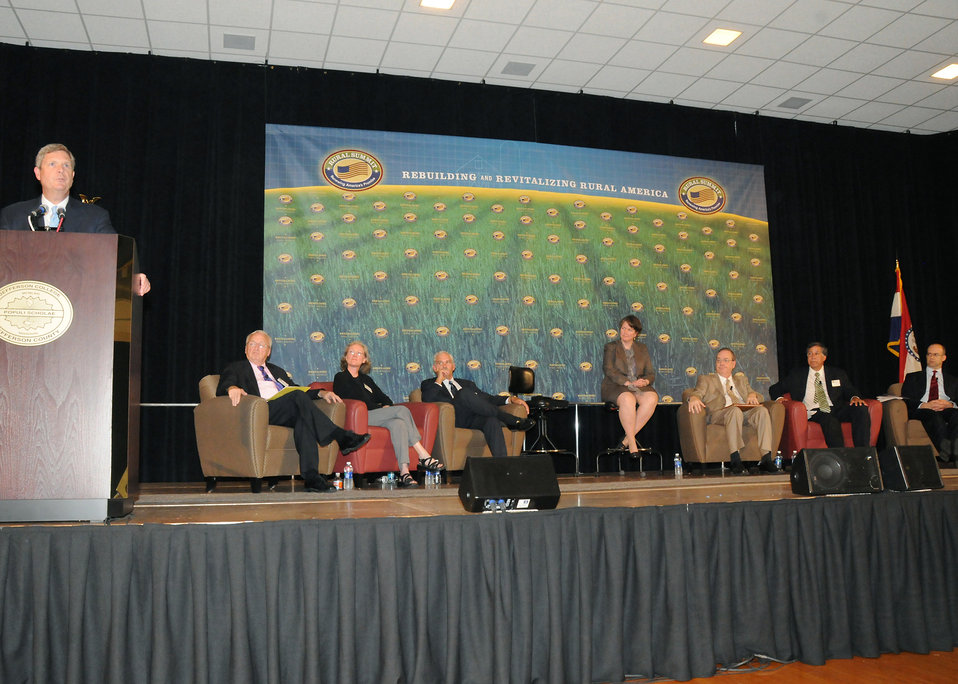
Agriculture Secretary Tom Vilsack makes closing remarks at the National Rural Summit held at Jefferson College in Hillsboro, MO., on Thursday, June 3, 2010. (Sitting on the stage are L to R Under Secretary for Food, Nutrition, and Consumer Services Kevin Concannon moderator of the Regional Food Systems and Nutrition listening session, Deputy Under Secretary for Marketing and Regulatory Programs Ann Wright moderator of the Forest Restoration, Rural Recreation and Private Land Conservation listening session, Deputy Under Secretary for Farm and Foreign Agricultural Services Michael Scuse moderator of the Farm Competiveness and Productivity listening session, Agriculture Deputy Secretary Kathleen Merrigan, Under Secretary for Rural Development Dallas Tonsager moderator of the Renewable Energy and Biofuels listening session, Under Secretary for Marketing and Regulatory Programs Ed Avalos moderator of the Expanding Opportunities for Rural Business listening session, and Rural Utility Service Administrator John Adelstein moderator of the Building Critical Infrastructure for a 21st Century Rural Economy listening session) USDA photo 10di1388-392